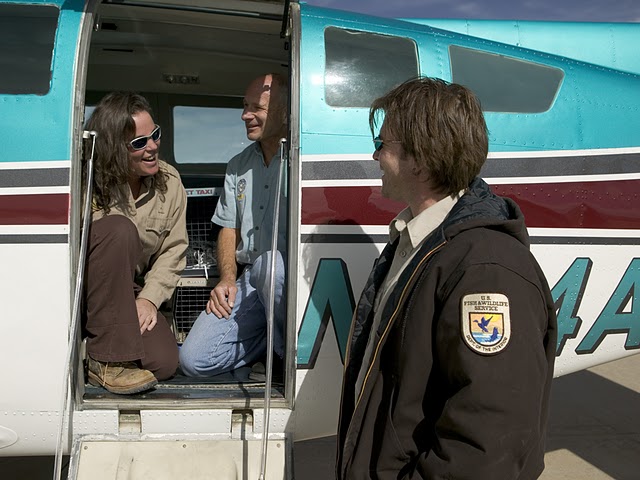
National Black-footed Ferret Conservation Center